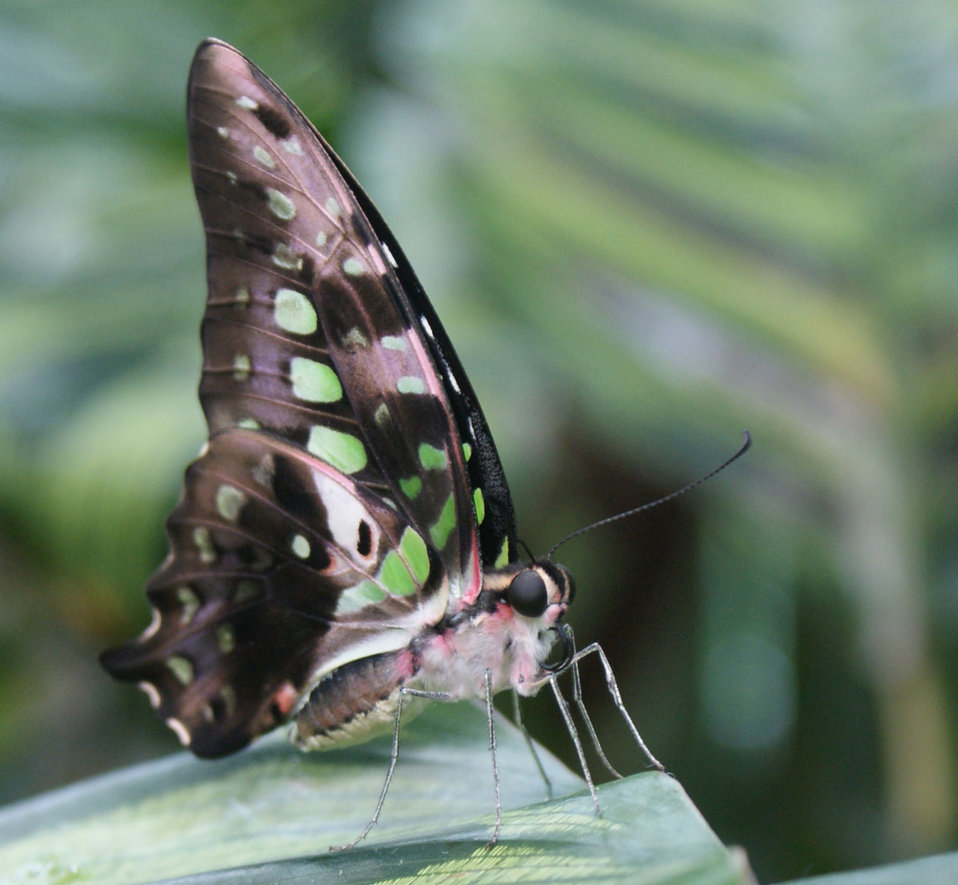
Graphium agamemnon

Tailed jay butterfly found in southeast asia..